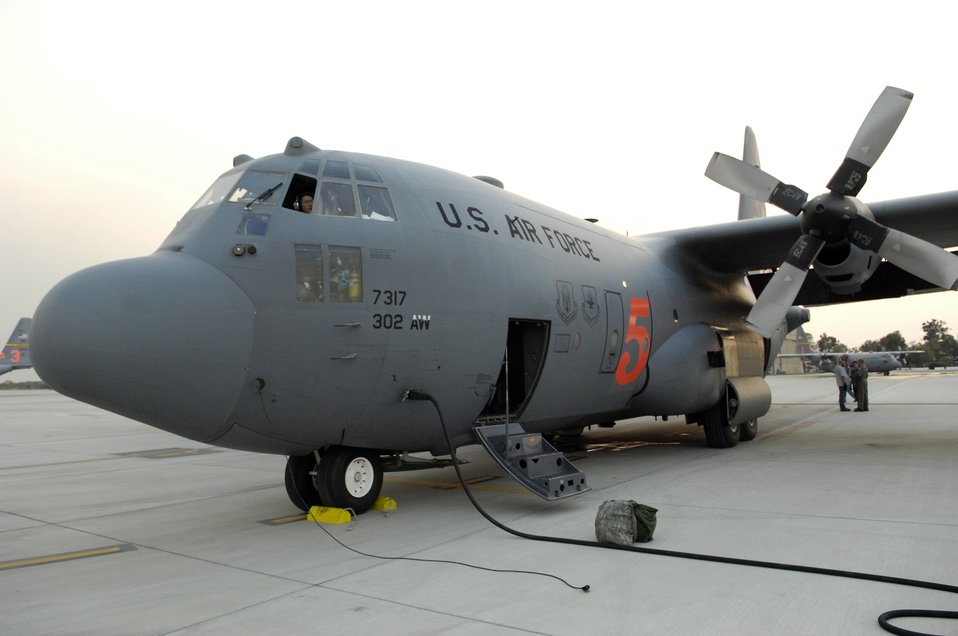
C-130s fight California wildfires

C-130 Hercules Modular Airborne Firefighting System aircraft No. 5, or MAFFS 5, sits on the flightline at Channel Islands Air National Guard Station, Calif., after deploying 3,000 gallons of fire retardant over the Poomacha fire Oct. 24 in North San Diego County, Calif. The C-130 and crew are assigned to the 302nd Airlift Wing from Peterson Air Force Base, Colo. Air Force Reserve Command officials sent two of its designated firefighting C-130H3 aircraft to help battle the raging wildfires in Southern California.